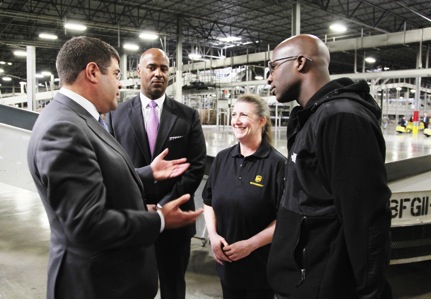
Deputy Secretary Wolin visits UPS consolidation hub on trip to Chicago

On February 25, 2013, Acting Secretary Wolin (left) visited a UPS consolidation hub near Chicago to see the importance of infrastructure and education to businesses and economic growth. Pictured with (l. to r.) UPS Central Region President Stan Deans, Night Supervisor Jean Kane and Sunrise Supervisor Ken Colier